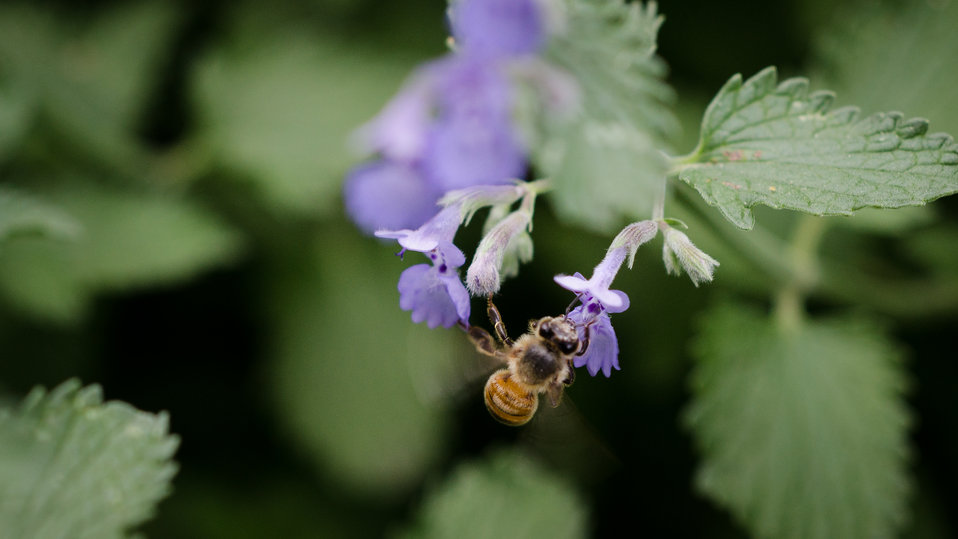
A honey bee is attracted to flowers in the U.S. Department of Agriculture People's Garden, outside the headquarters' Whitten Building in Washington, D.C., on Tuesday, May 21, 2013.This flower attracts bees because it provides nectar for the hive to feed on. Other plant in the garden have pollen that other bees will feed on. The bees gather pollen from many flowers and aide in pollination by moving from plant to plant.